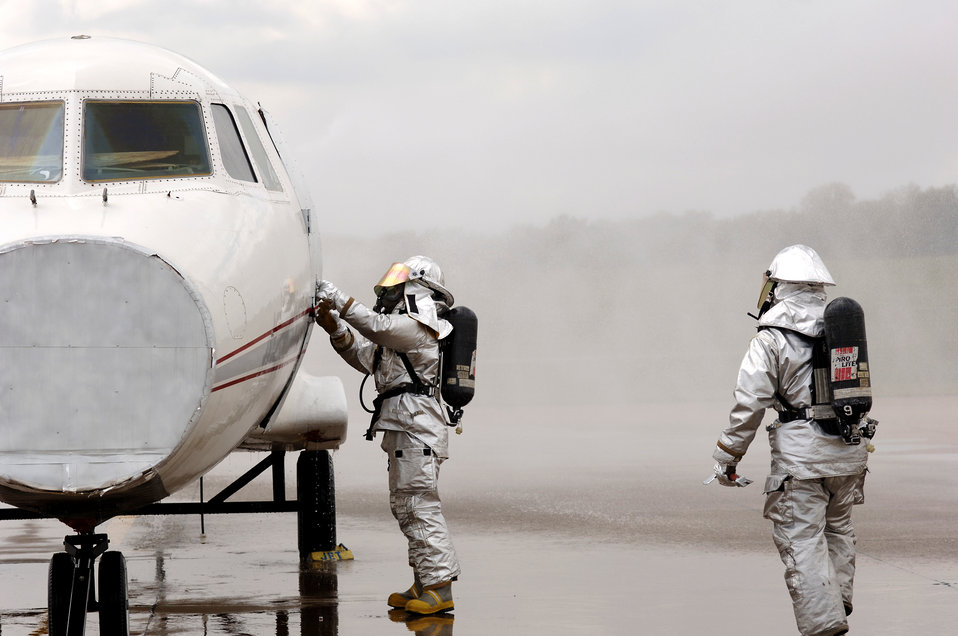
Firefighter training

Two firefighters open the hatch of a simulated burning aircraft during a fire training exercise on Sunday, May 7, 2006, in Tulsa, Okla. They are assigned to the Air National Guard's 138th Civil Engineer Squadron in Tulsa.